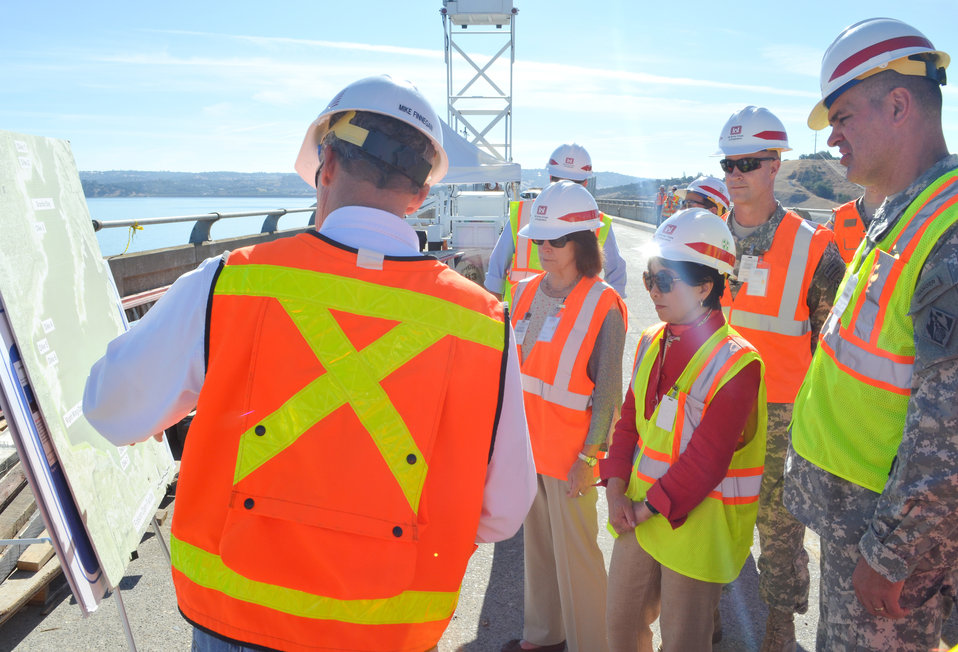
Secretary Darcy, Rep. Matsui visit Folsom Dam Joint Federal Project

Mike Finnegan, area manager of the U.S. Bureau of Reclamation’s Central California Area Office (left), details ongoing progress on the Folsom Dam Joint Federal Project for Jo-Ellen Darcy, Assistant Secretary of the Army for Civil Works (center left), and U.S. Rep. Doris Matsui (center right) in Folsom, Calif., Sept. 27, 2011. The JFP is a joint effort of the U.S. Army Corps of Engineers and the Bureau of Reclamation to improve the safety of Folsom Dam and reduce flood risk for the Sacramento area.